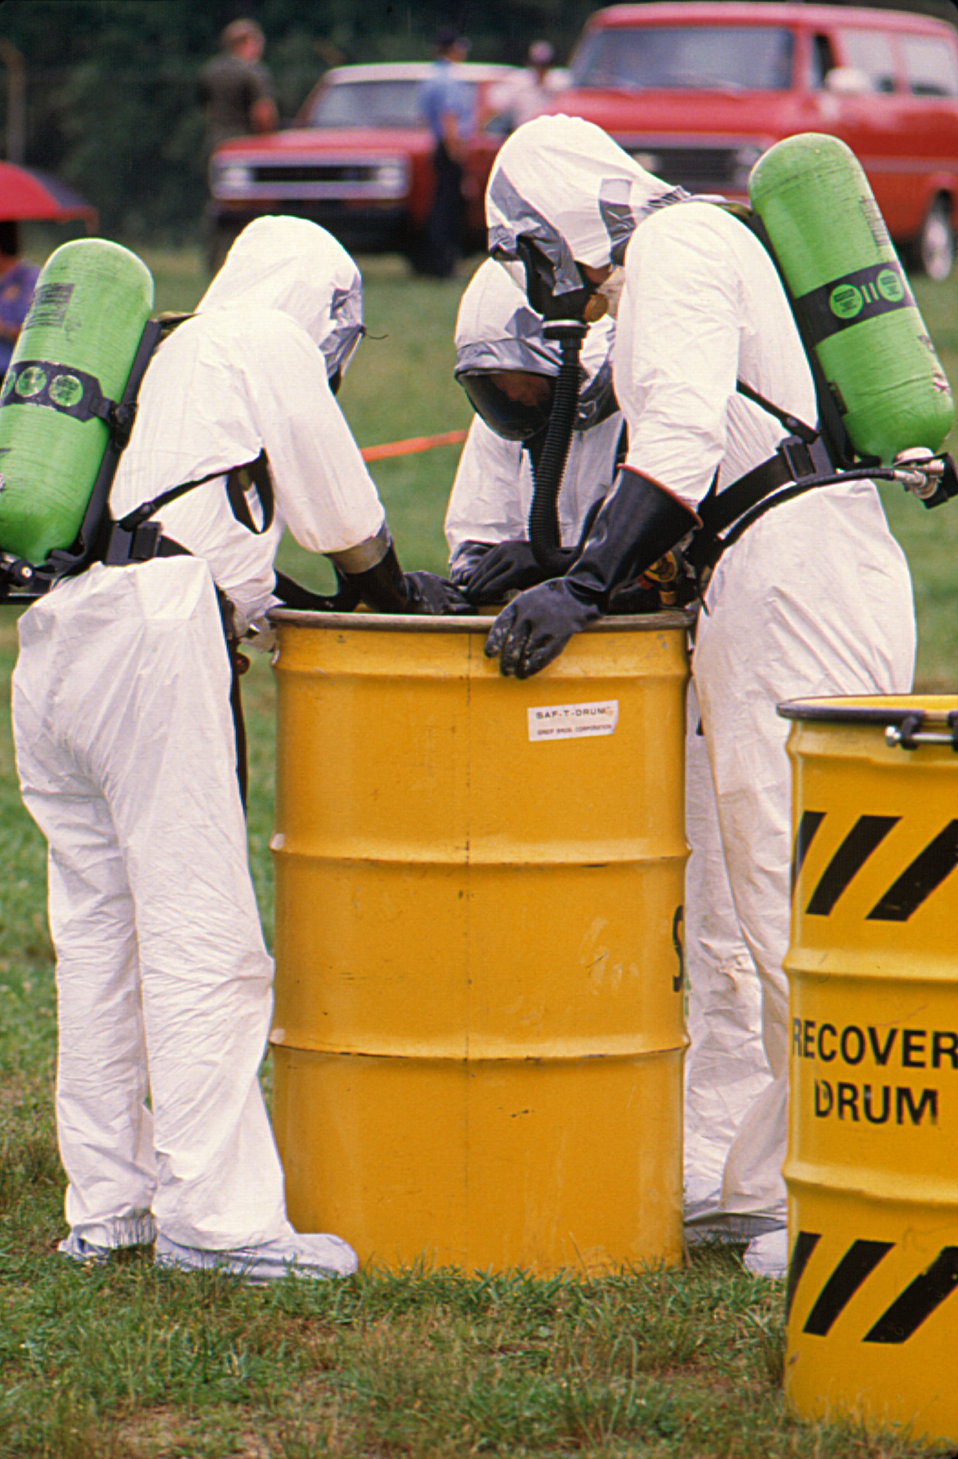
Hazardous Materials Containment